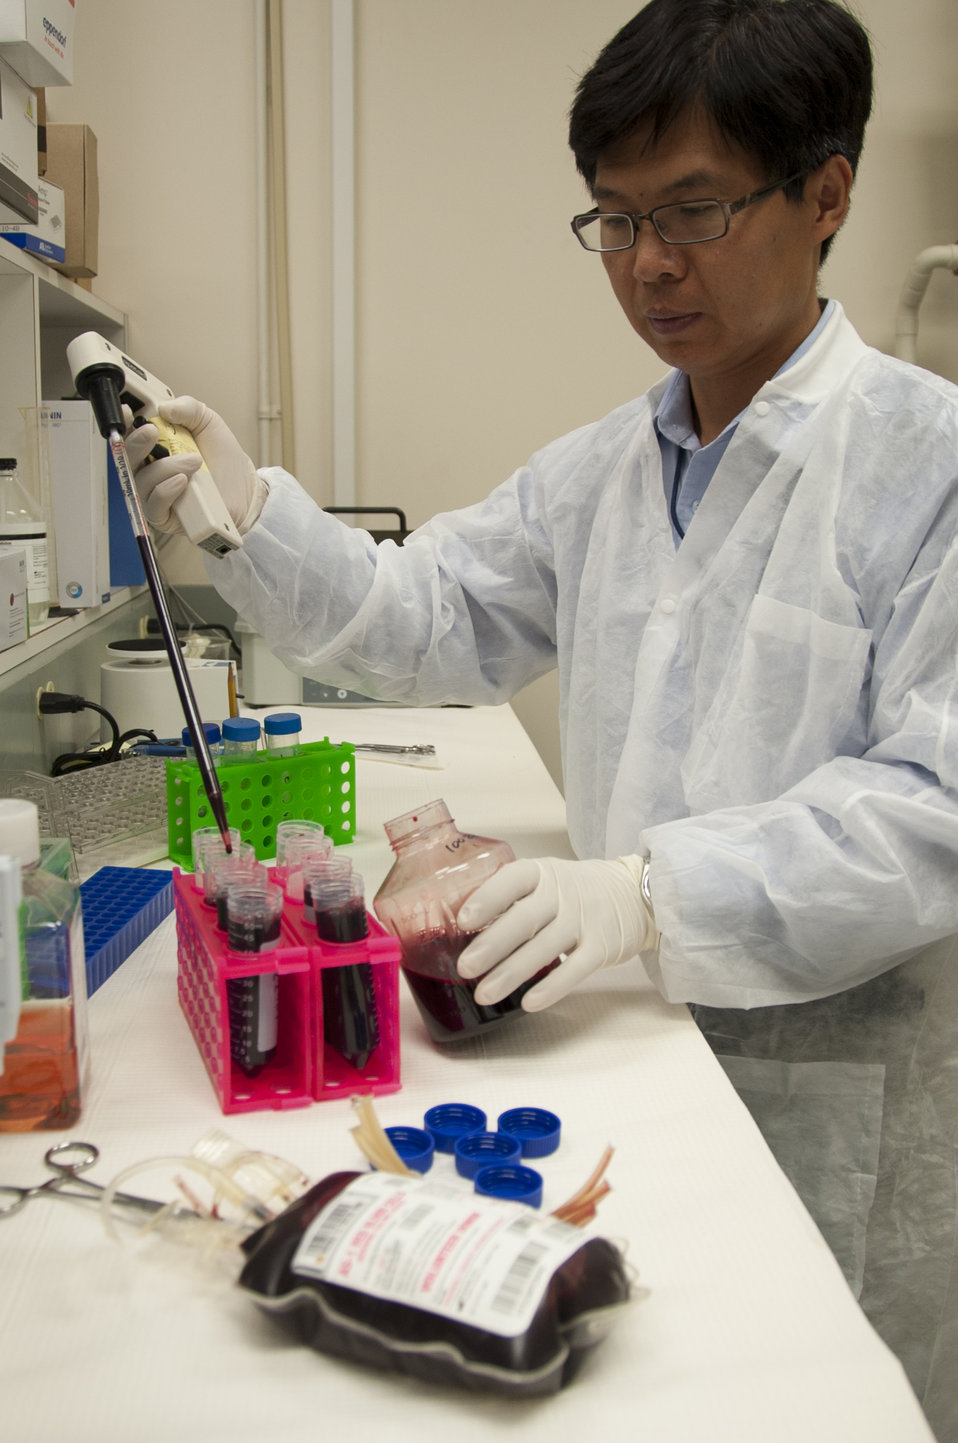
Blood Research: Saving Lives (8343)

Jason Liu, Ph.D., laboratory chief at FDA’s Office of Blood Research and Review, transferring blood to 50 ml tubes as he prepared to isolate blood components. A unit of whole blood can be separated, for example, into platelets and red blood cells. The separated components can be studied separately and can be used for different patients with different needs. FDA is responsible for the safety of our nation’s blood supply and is at the forefront of evaluating and encouraging innovative technologies for protecting it.

Read this Consumer Update to learn more: Advances in Saving Lives with Blood